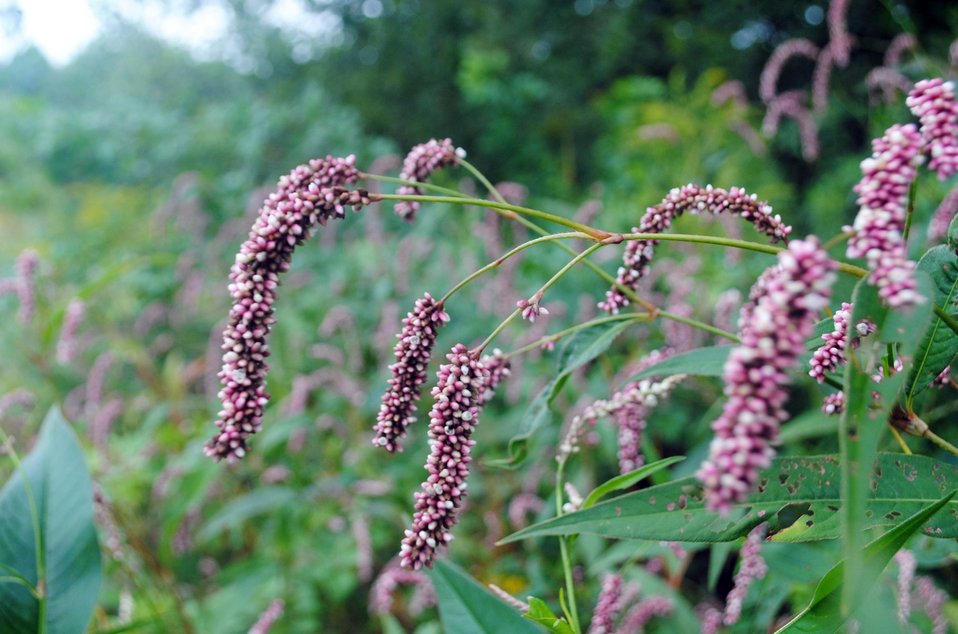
Wildflower

Pink wildflowers at the Fort River Division of the Silvio O. Conte National Wildlife Refuge, Hadley, MA.